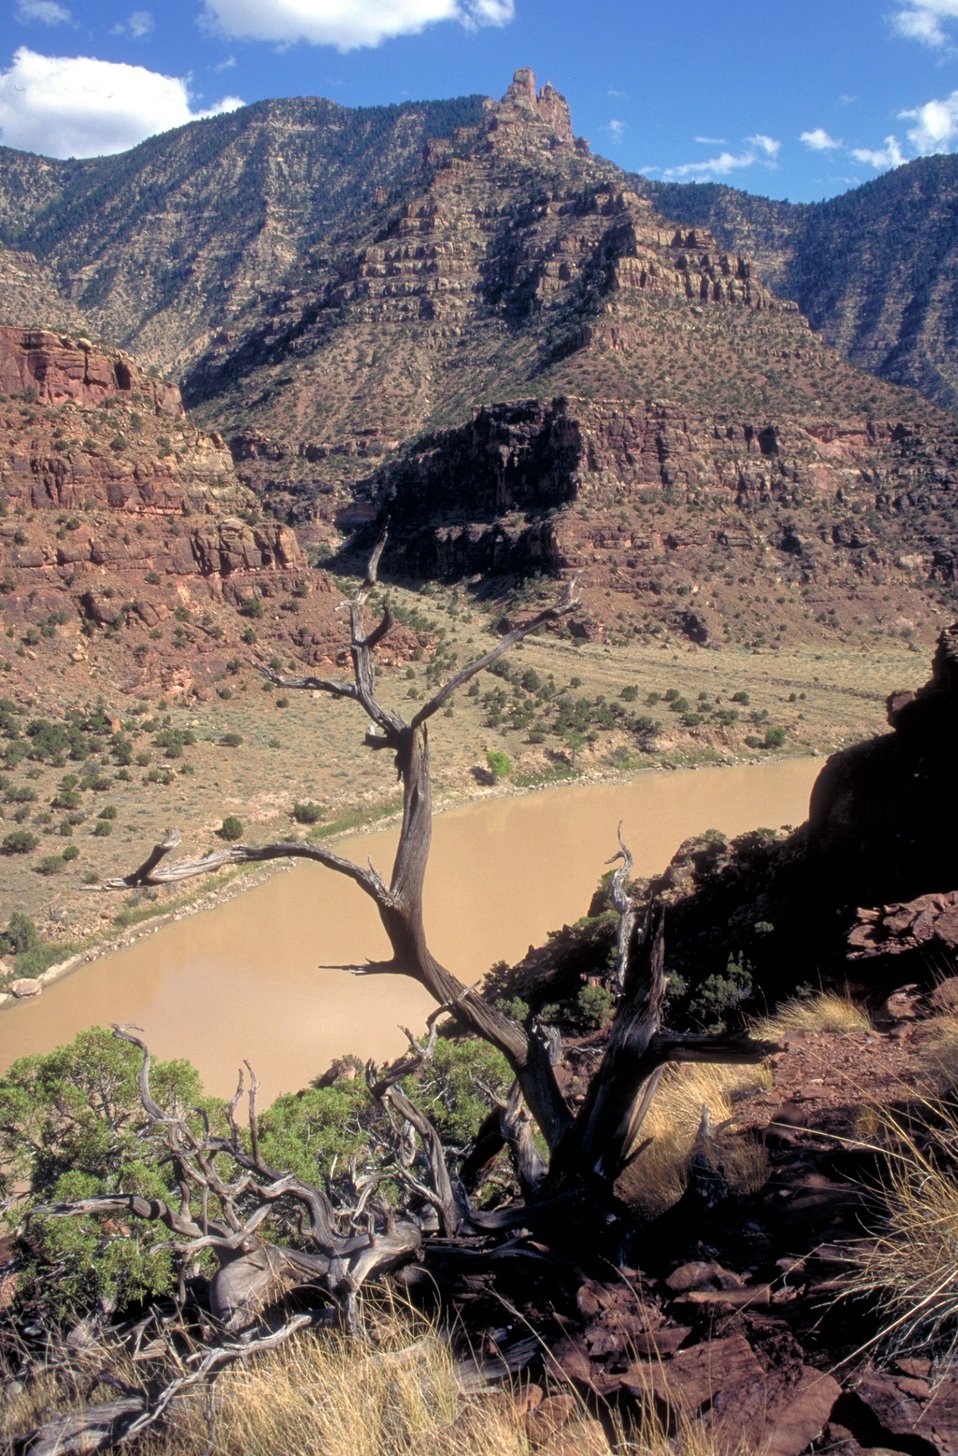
Desolation/Gray Canyons near Price, Utah.